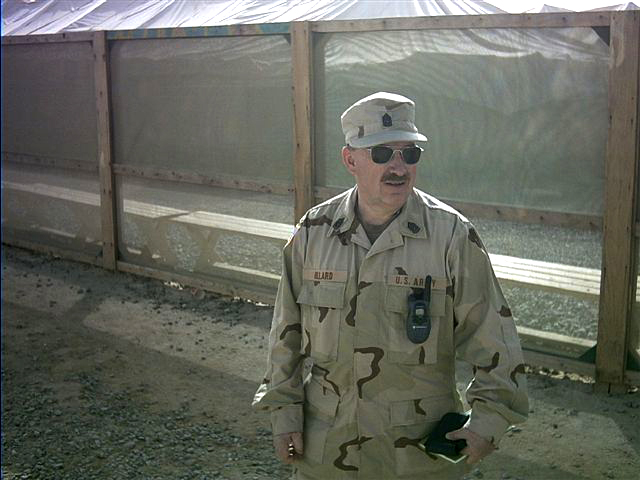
Richard Hilliard, a Contracting Officer in Region 3, served time in Iraq during Operation Iraqi Freedom with the U.S. Army Reserves.